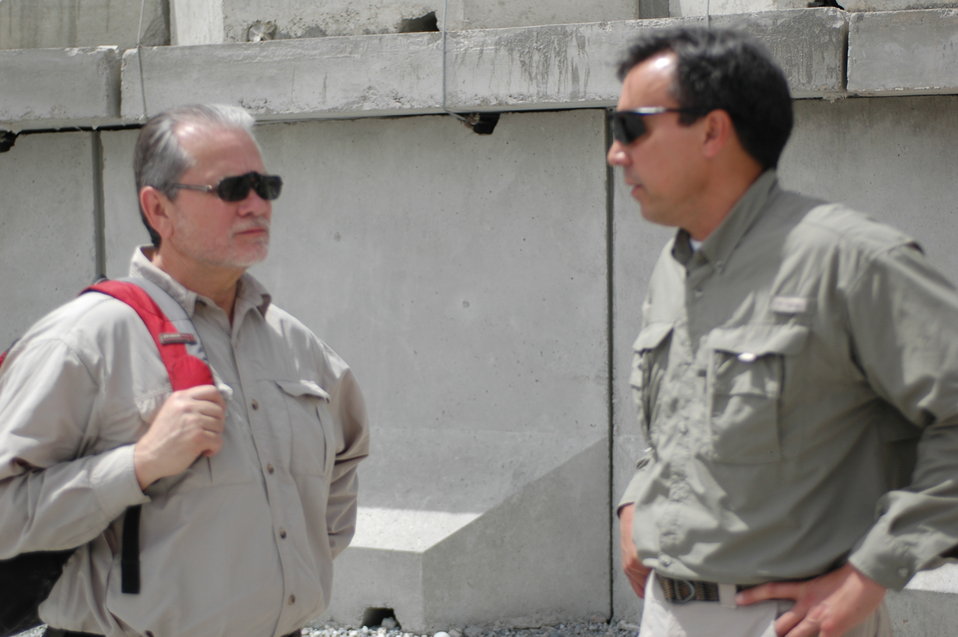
Dr Shah Visits Kandahar April 9, 2010